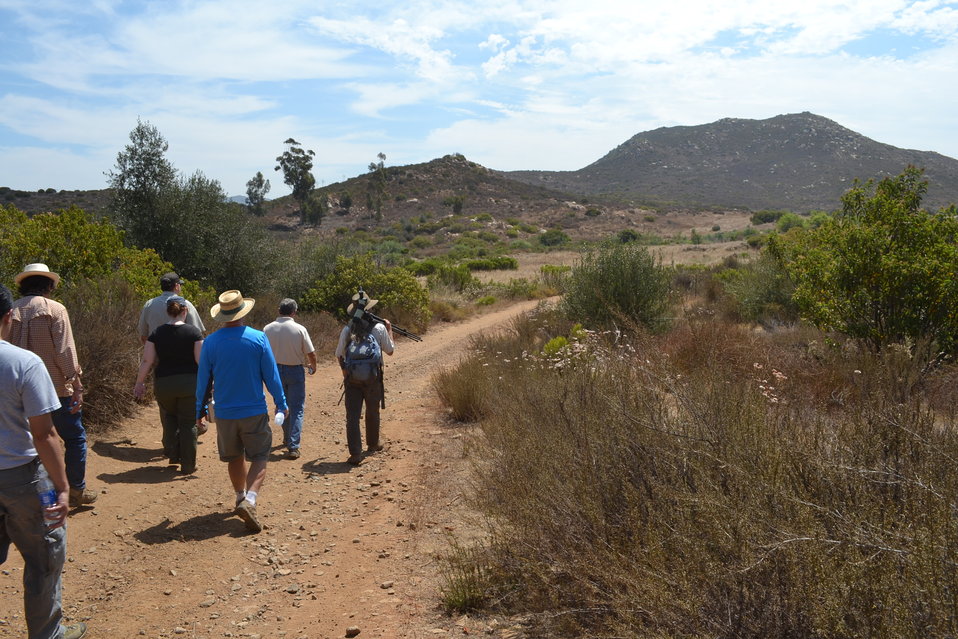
Hidden Valley Ribbon Cutting

Guests go on a short nature walk with Refuge Wildlife Biologist John Martin. (USFWS)